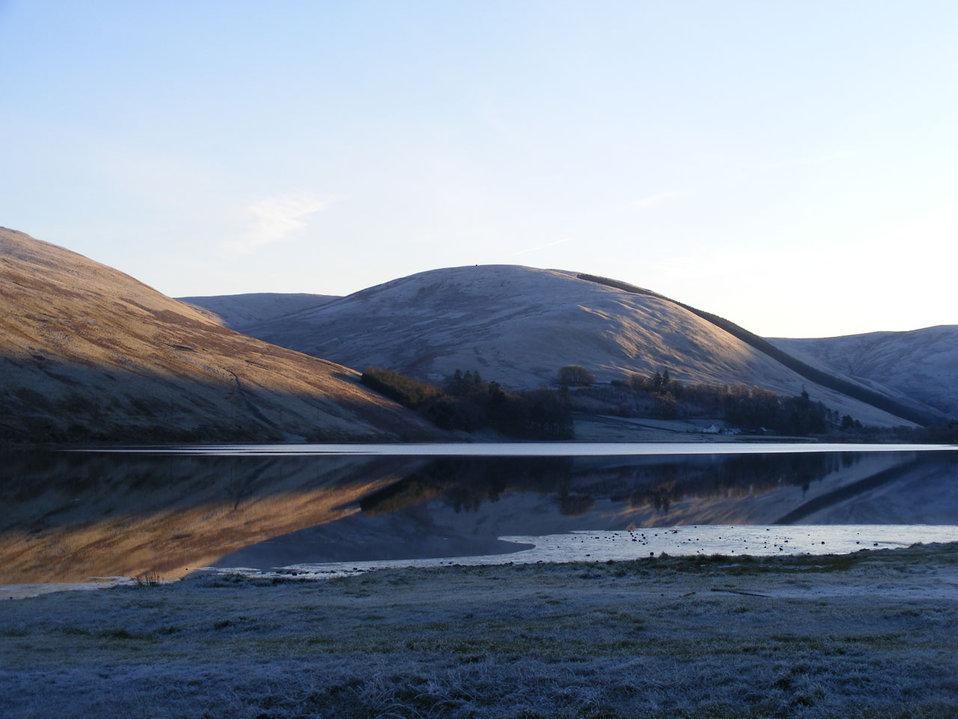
Stillness

St marys loch scottish borders.